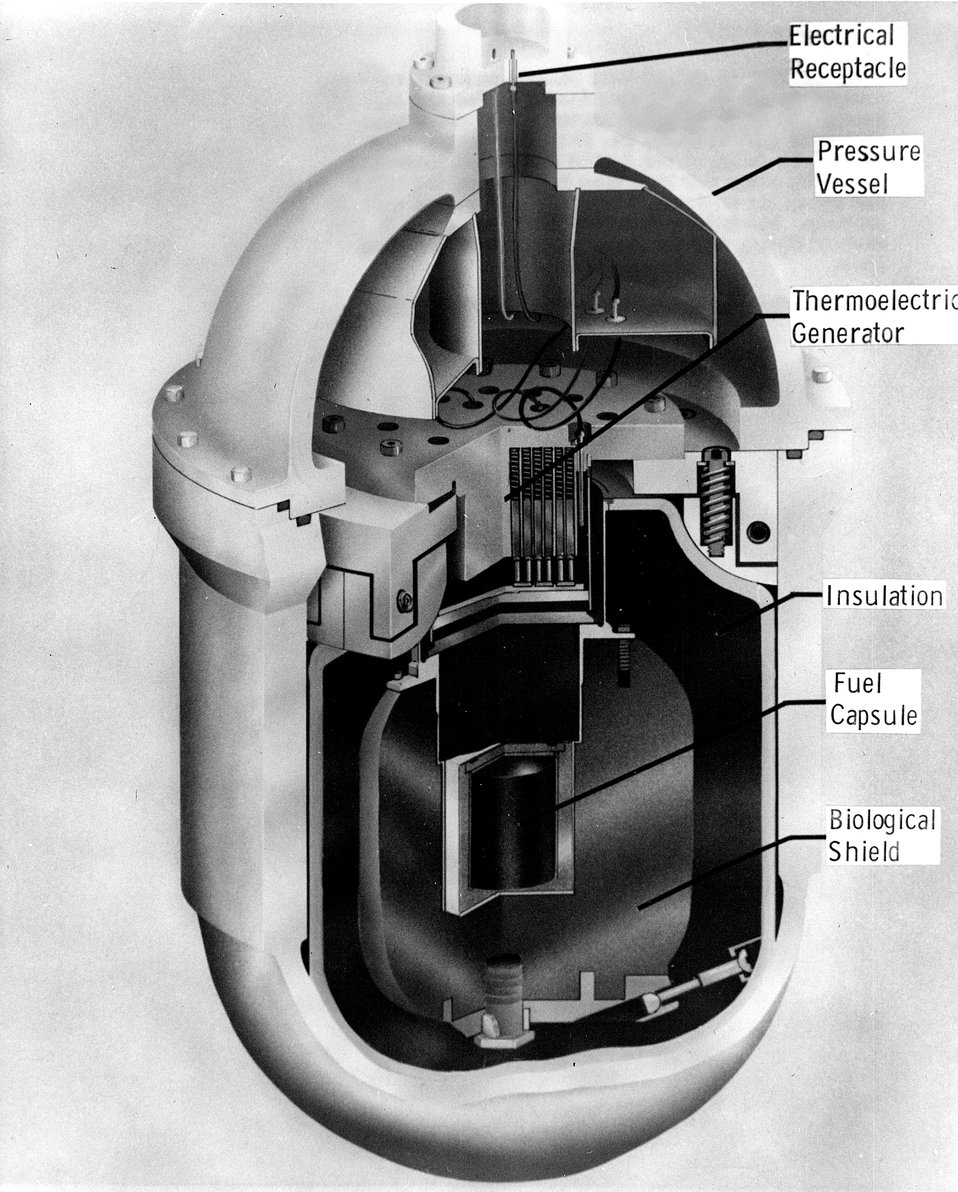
Cross-section of the 10-watt SNAP-21 undersea radioisotope energy system being developed for the Atomic Energy Commission by the Minnesota Mining Manufacturing (3M) Company, St. Paul, Minnesota.